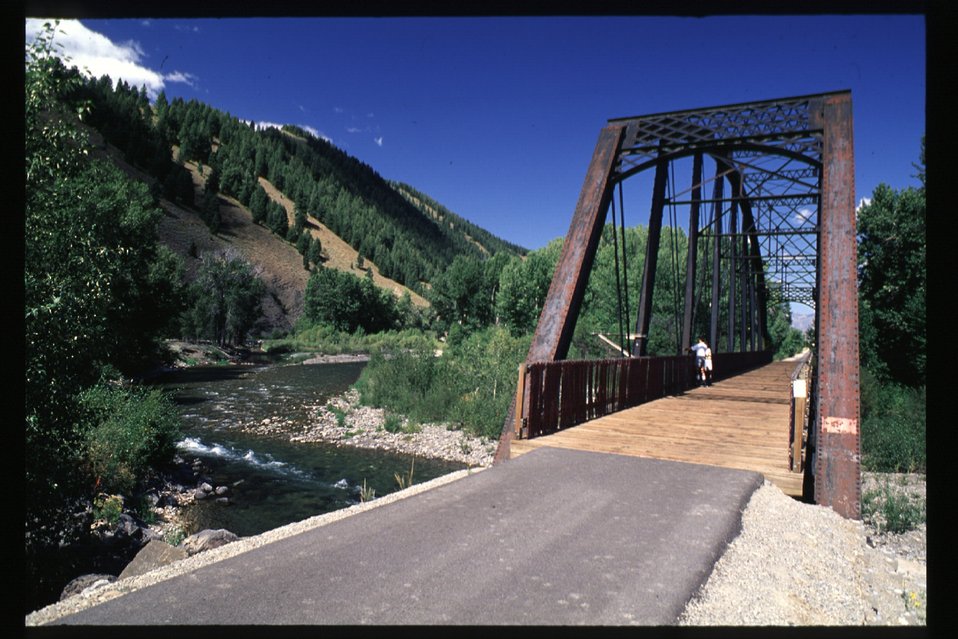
Recreation Scenic Biker Shoshone Field Office USRD Upper Snake River District